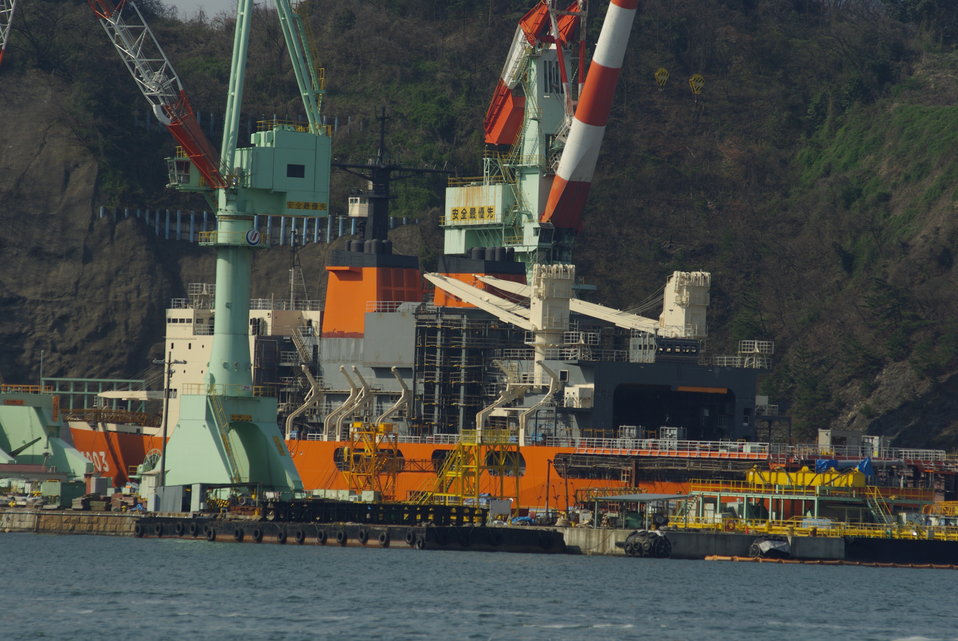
日本語: 建造中のAGB5003を舞鶴、北吸桟橋にて撮影 Japanese icebreaker 'Shirase' (AGB-5003), successor of aged Shirase (AGB-5002), building at dock in Maizuru, Kyoto.